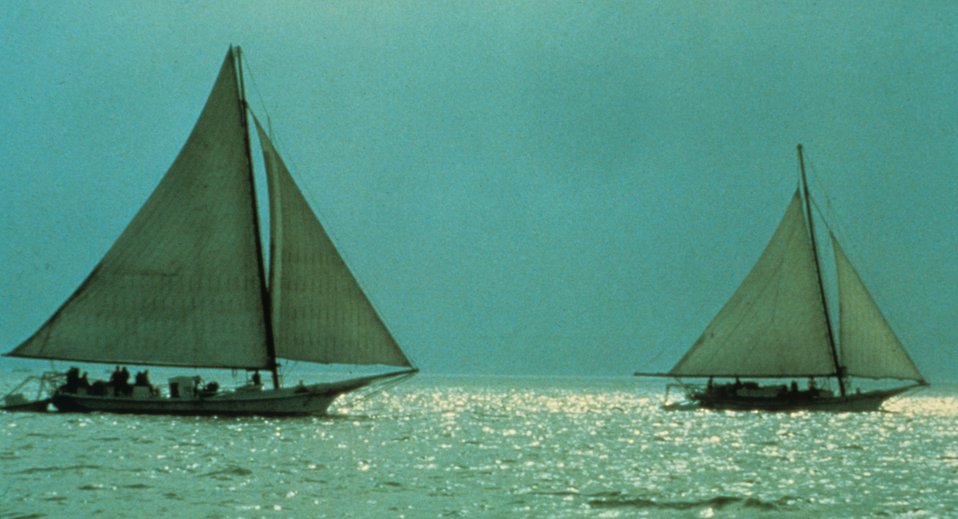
Chesapeake Bay skipjacks working on the Bay late in the afternoon.